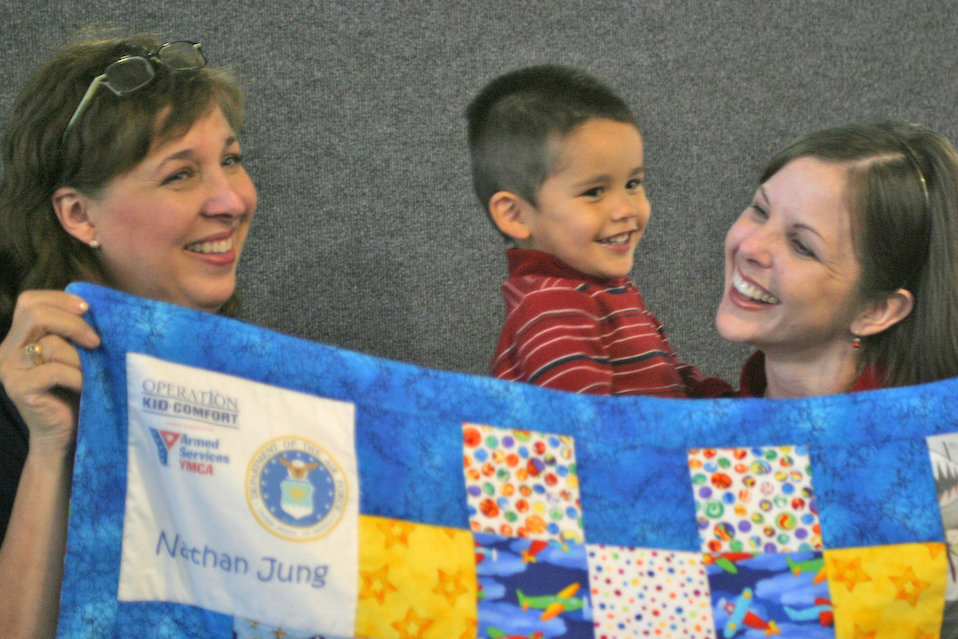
Sew much support

Giselle Schneider, an Operation Kid Comfort volunteer, meets Cathy Jung and son Nathan. Mrs. Schneider works on Operation Kid Comfort quilts every day because she said service members work on behalf of America every day.